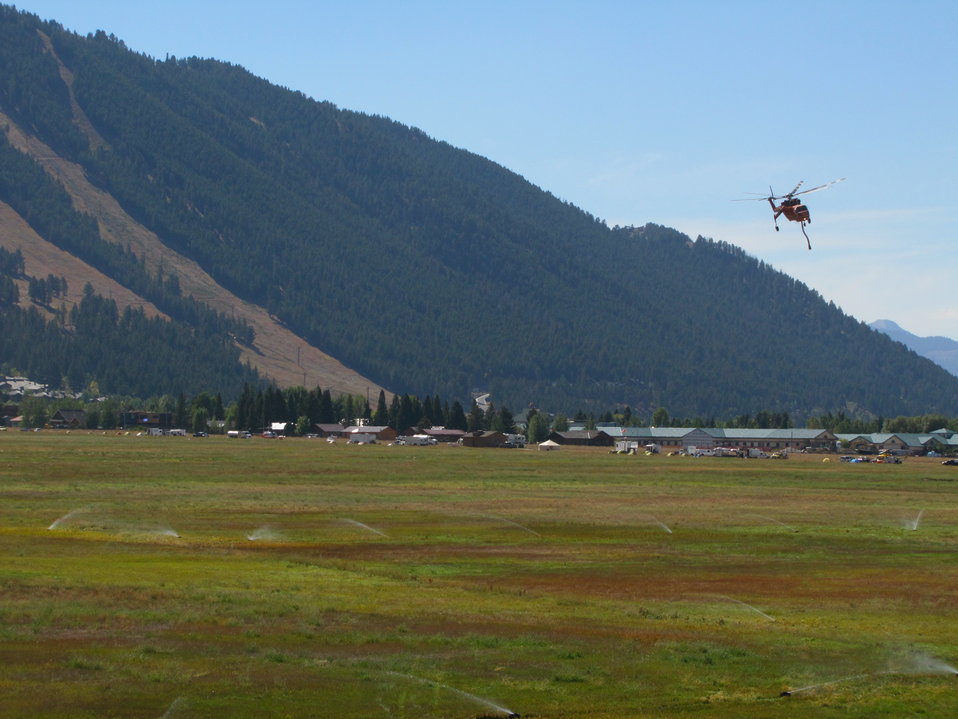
Two Uses of the Refuge's Irrigation System

The refuge's irrigation system shifted to a new and unexpected use during the Horsethief Canyon Fire. In addition to the regular landscape irrigation provided by the system as seen in the foreground of the picture, it was critical to supplying water needed for fire suppression operations.